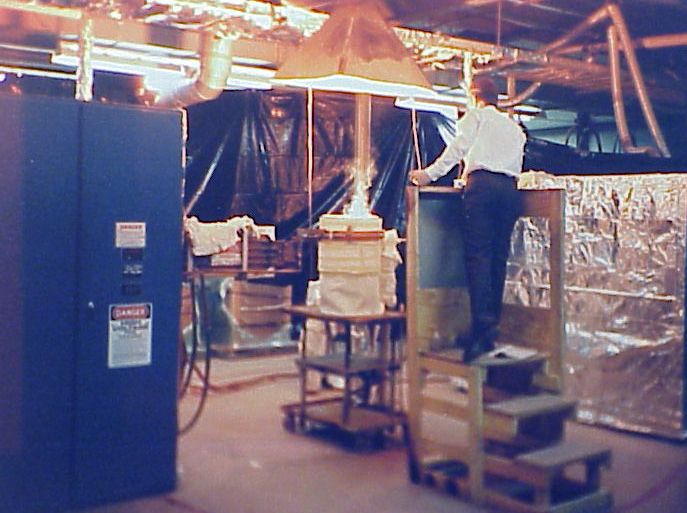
Larry P Kelley (president of ICT, INC.) monitoring a 1,000KW RF furnace and skull crucible containing 800 lbs of zirconium oxide and yttrium oxide being melted to form 'cubic' zirconia. Picture taken by his remote camera.